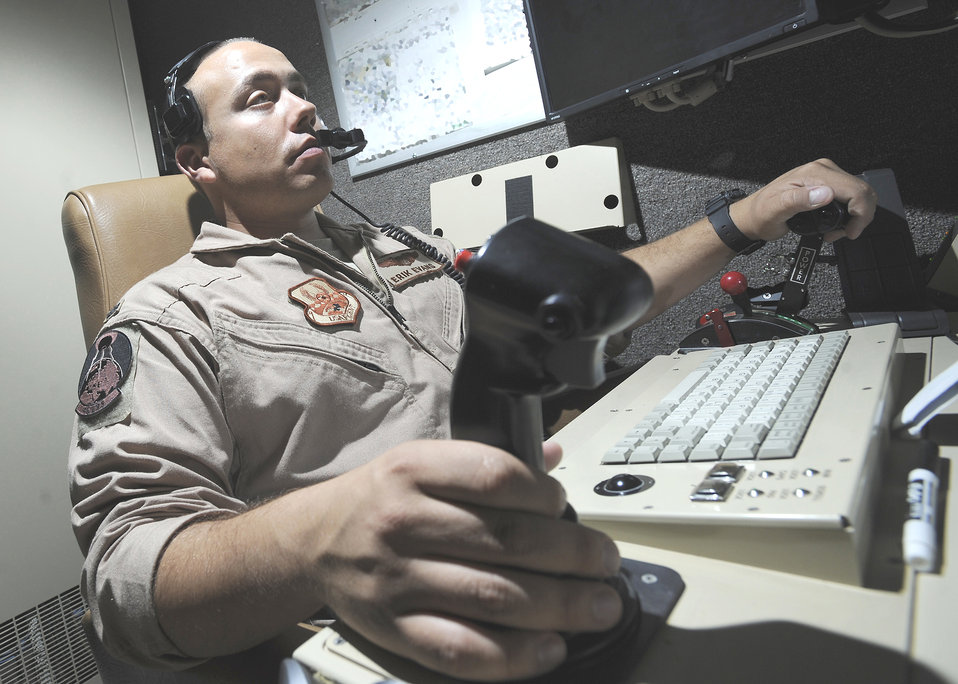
Balad Predators

1st Lt. Erik Evans controls an MQ-1B Predator for takeoff for a mission Aug. 3, 2010. Lieutenant Evans engaged in a routine remote split operations mission, where he launched the aircraft and turned over control to a unit in the U.S. Lieutenant Evans is a 46th Expeditionary Reconnaissance Squadron pilot.